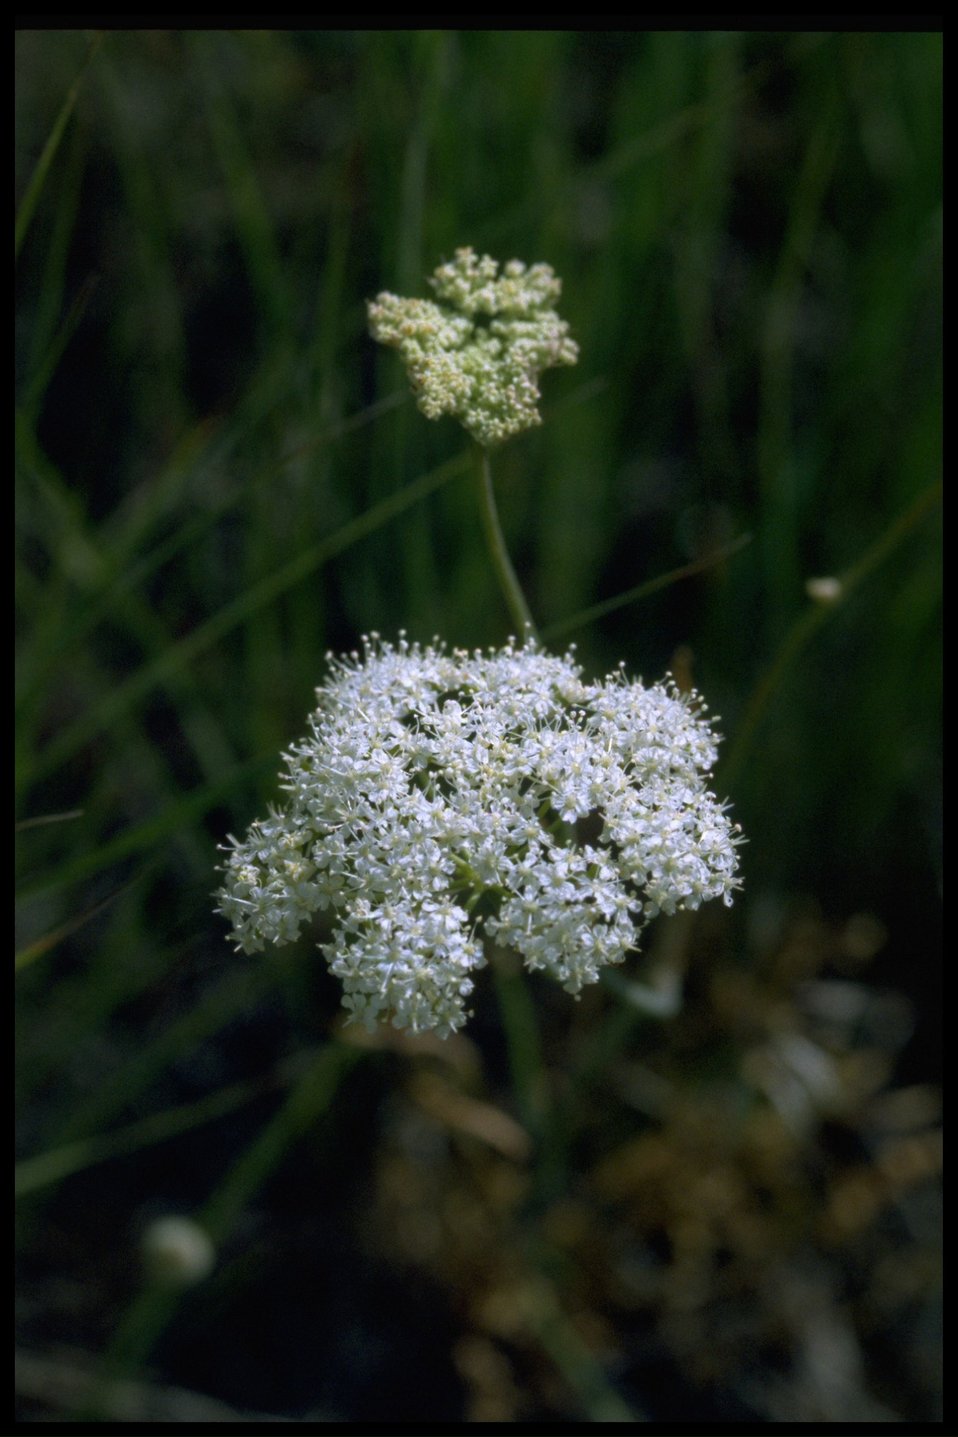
Closeup shot of Yampah wildflowers.